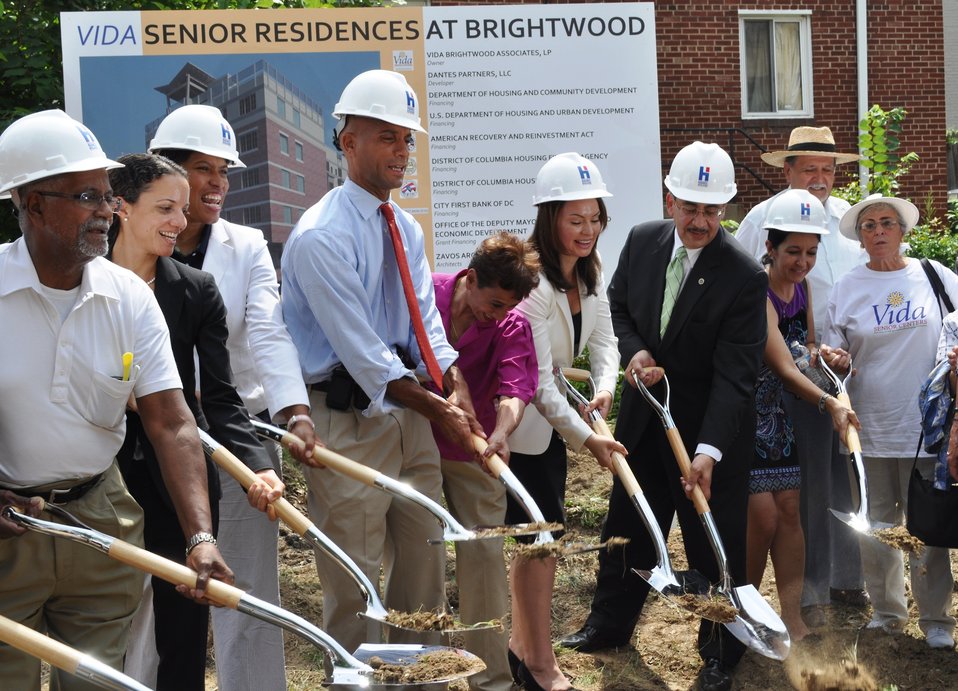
Treasurer Rios at a groundbreaking on new Vida Senior Residence funded in part by the Recovery Act, 7/27/2010

As part of the Administration’s Recovery Summer outreach, Treasurer of the United States Rosie Rios joined DC Mayor Adrian Fenty to break ground on the Vida Senior Residences at Brightwood 36-unit affordable apartment building for low-income seniors in D.C.